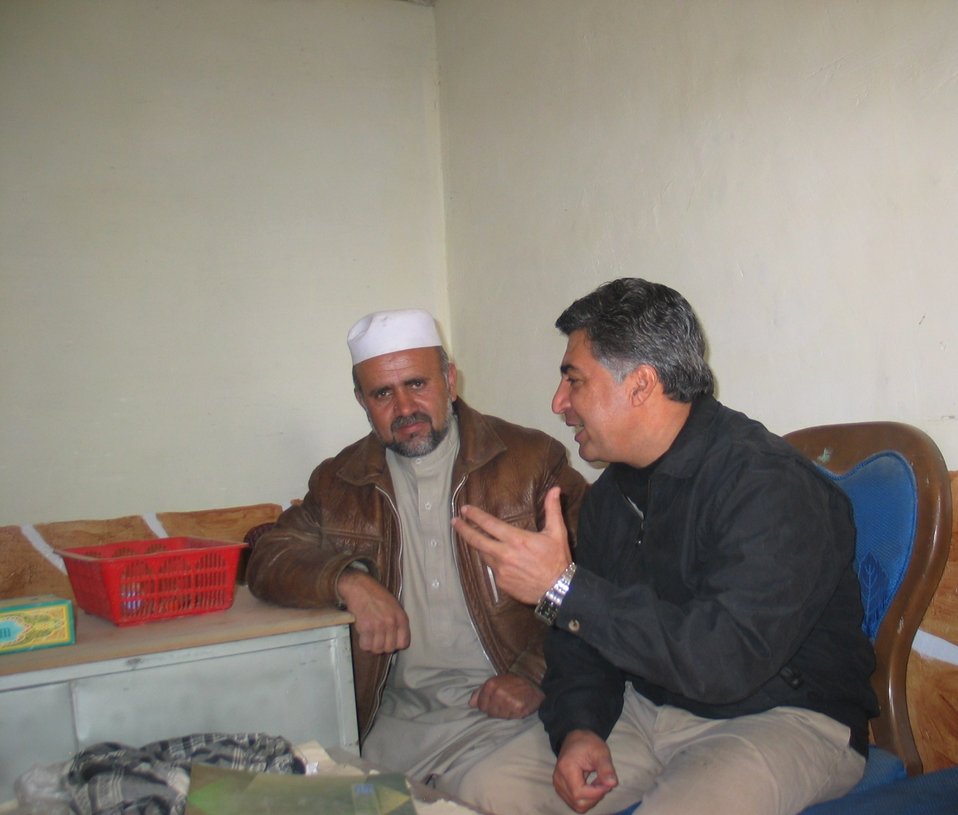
Kabul River Bridge Renovation, December 3, 2010